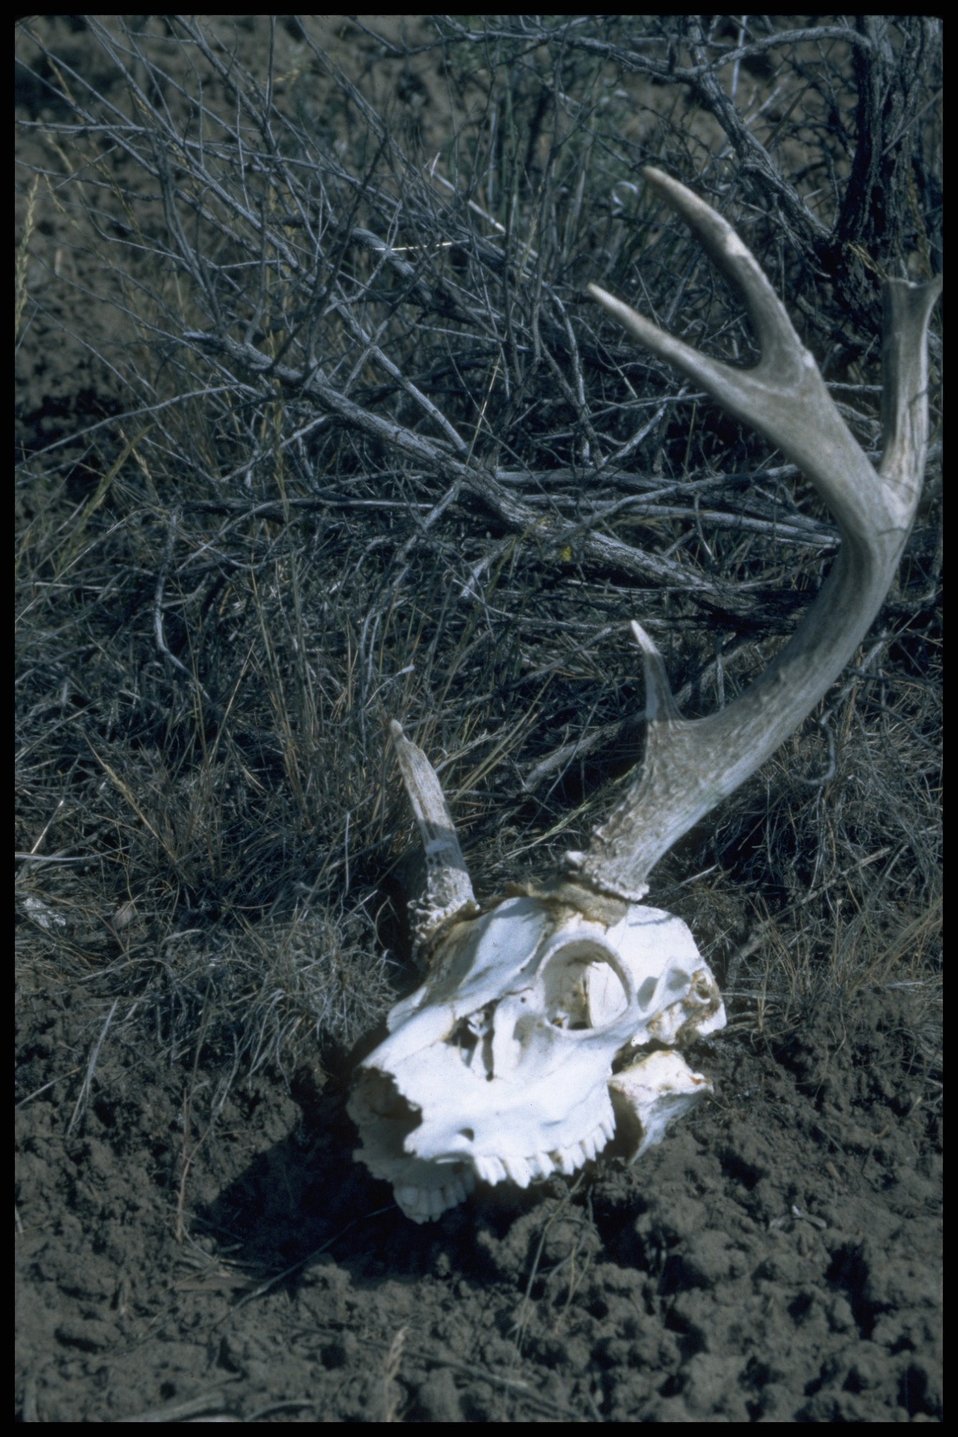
Deer skull with antlers, Lakeview District.